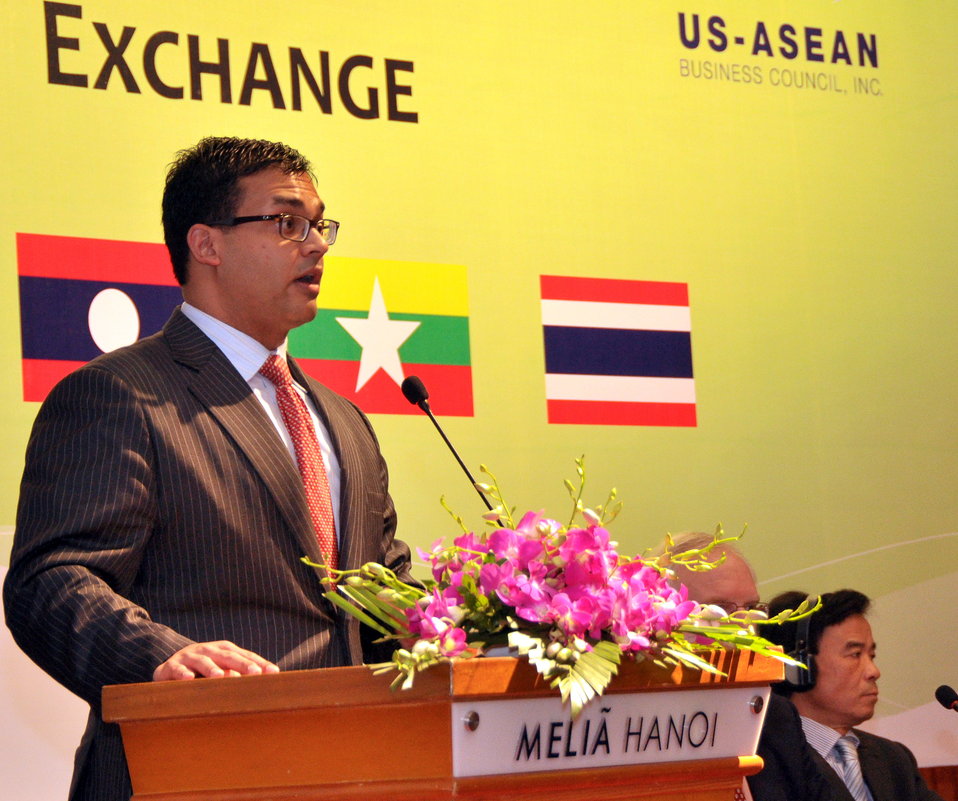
Mr. Nirav Pate, Deputy Assistant Secretary, Bureau of East Asian and Pacific Affairs, U.S. Department of State, speaks at the Lower Mekong Initiative Infrastructure Best Practices Exchange in Hanoi

Hanoi: January 14, 2013